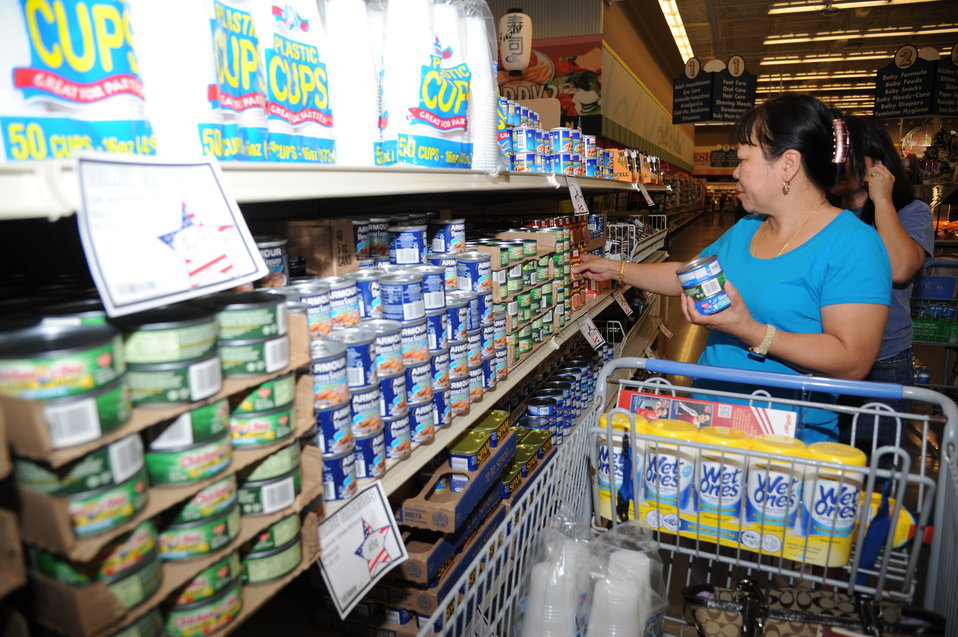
Keesler takes preventative measures to prepare for Isaac

8/28/2012 - Ida Owens, spouse of Kenneth Owens, Air Force retired and Keesler Postal Service employee, loads her grocery cart with canned goods and other hurricane supplies for her residence in D’Iberville, Miss., Aug. 27, 2012, at Keesler Air Force Base, Miss. Keesler personnel are taking preventative measures to prepare and protect themselves and Keesler's assets as the base commander has declared HURCON 3, meaning destructive winds of 58 mph or greater are expected as Isaac approaches.